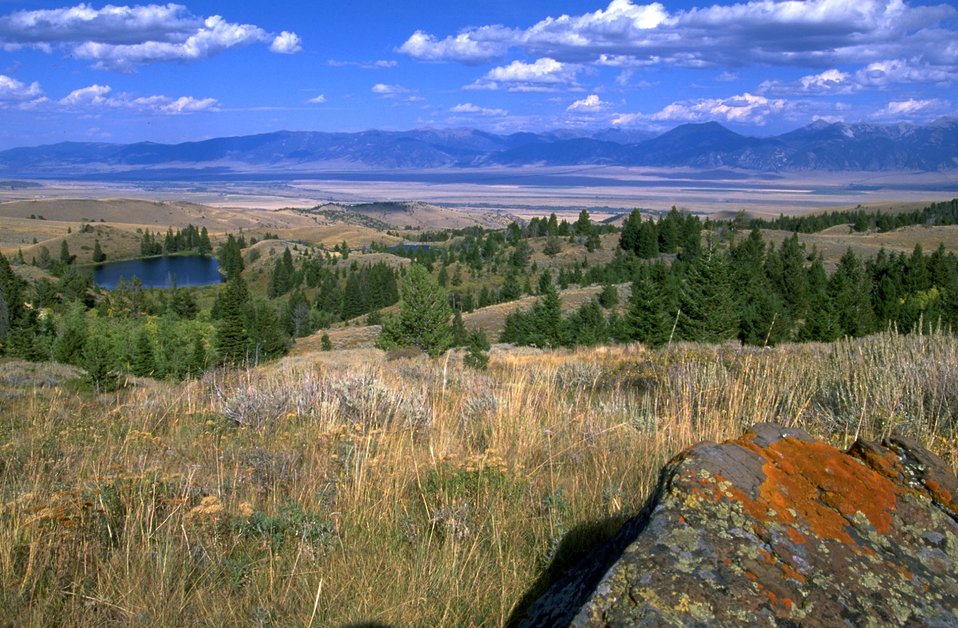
Twin Lakes area